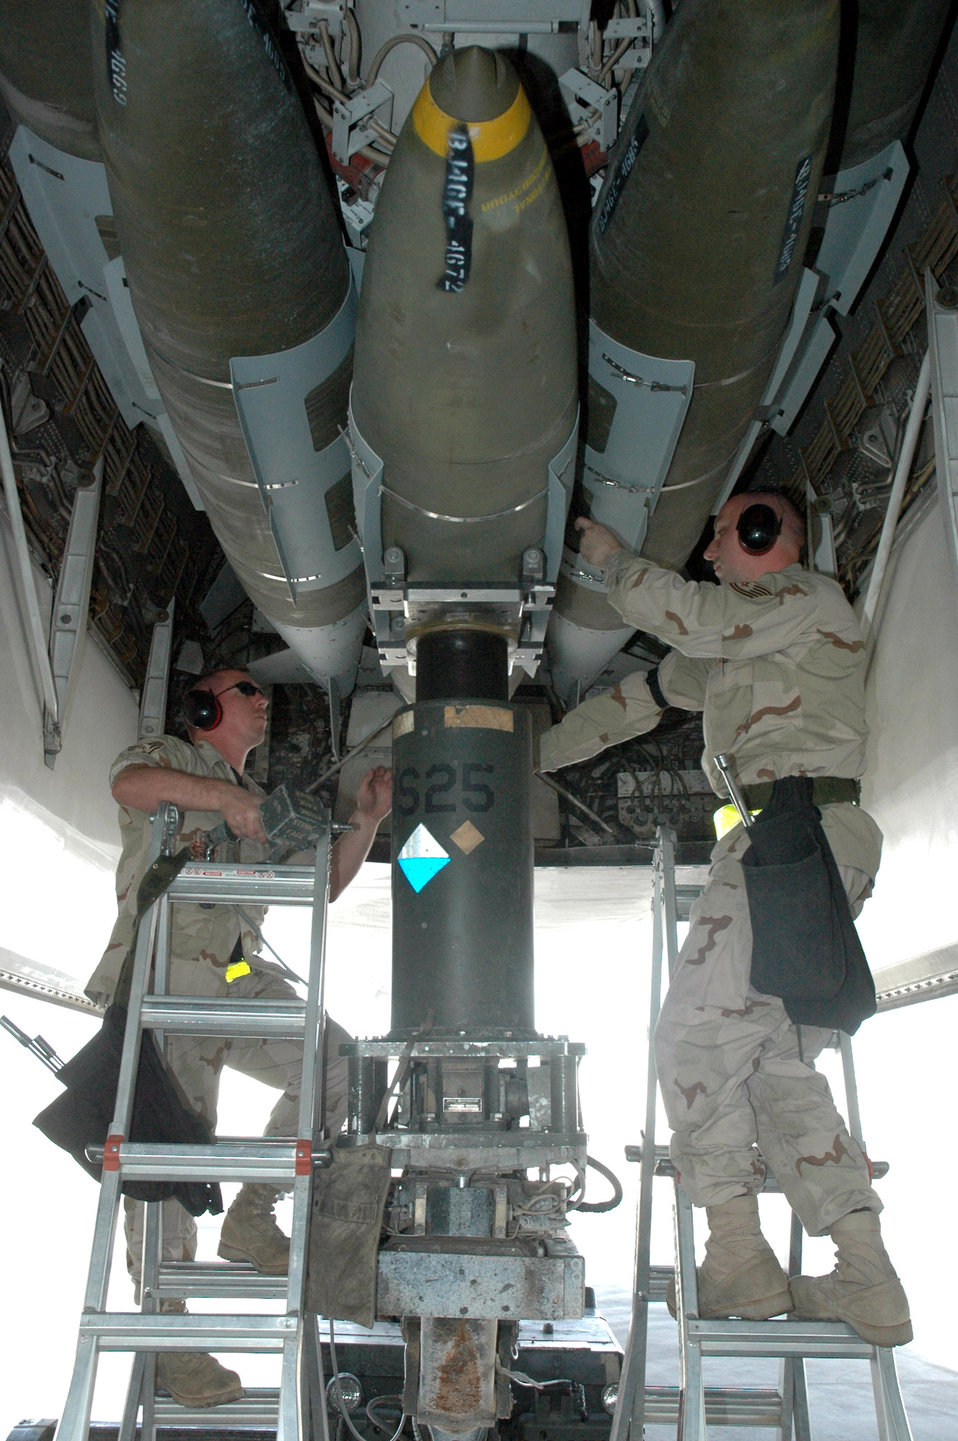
Airmen tackle increased operations tempo

Weapons load crew members, Staff Sgt. Kevin Rayburn (left) and Tech. Sgt. Jeff Allen, load a 2,000-pound GBU-31 Joint Direct Attack Munition hoisted up by a MJ-40 lift truck March 28 onto a B-1B Lancer. The Airmen are assigned to the 379th Expeditionary Aircraft Maintenance Squadron in support of Operation Iraqi Freedom and Operation Enduring Freedom in Afghanistan.